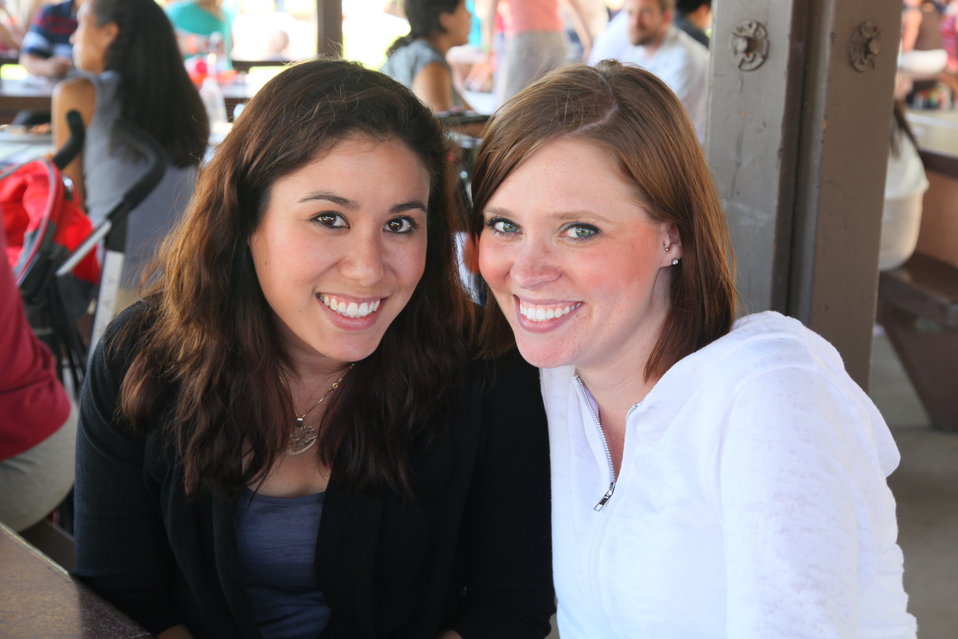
2011 Annual Picnic